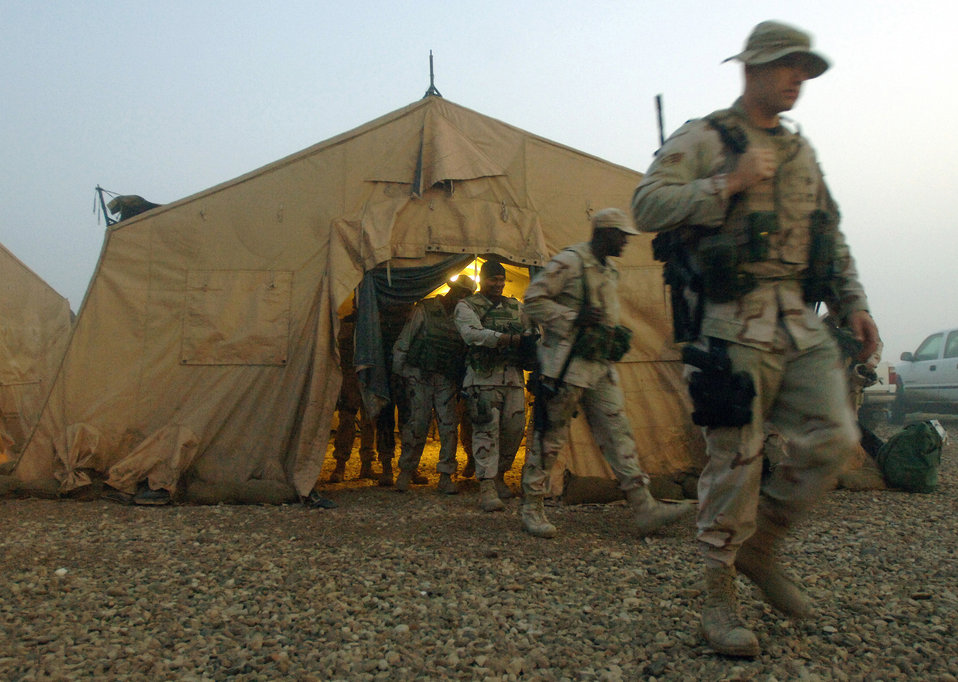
All secure

ALI BASE, Iraq (AFPN) -- Airmen depart geared up and ready to relieve the night shift after being briefed on current conditions Feb 16. The Airmen are with the 407th Expeditionary Security Forces Squadron.